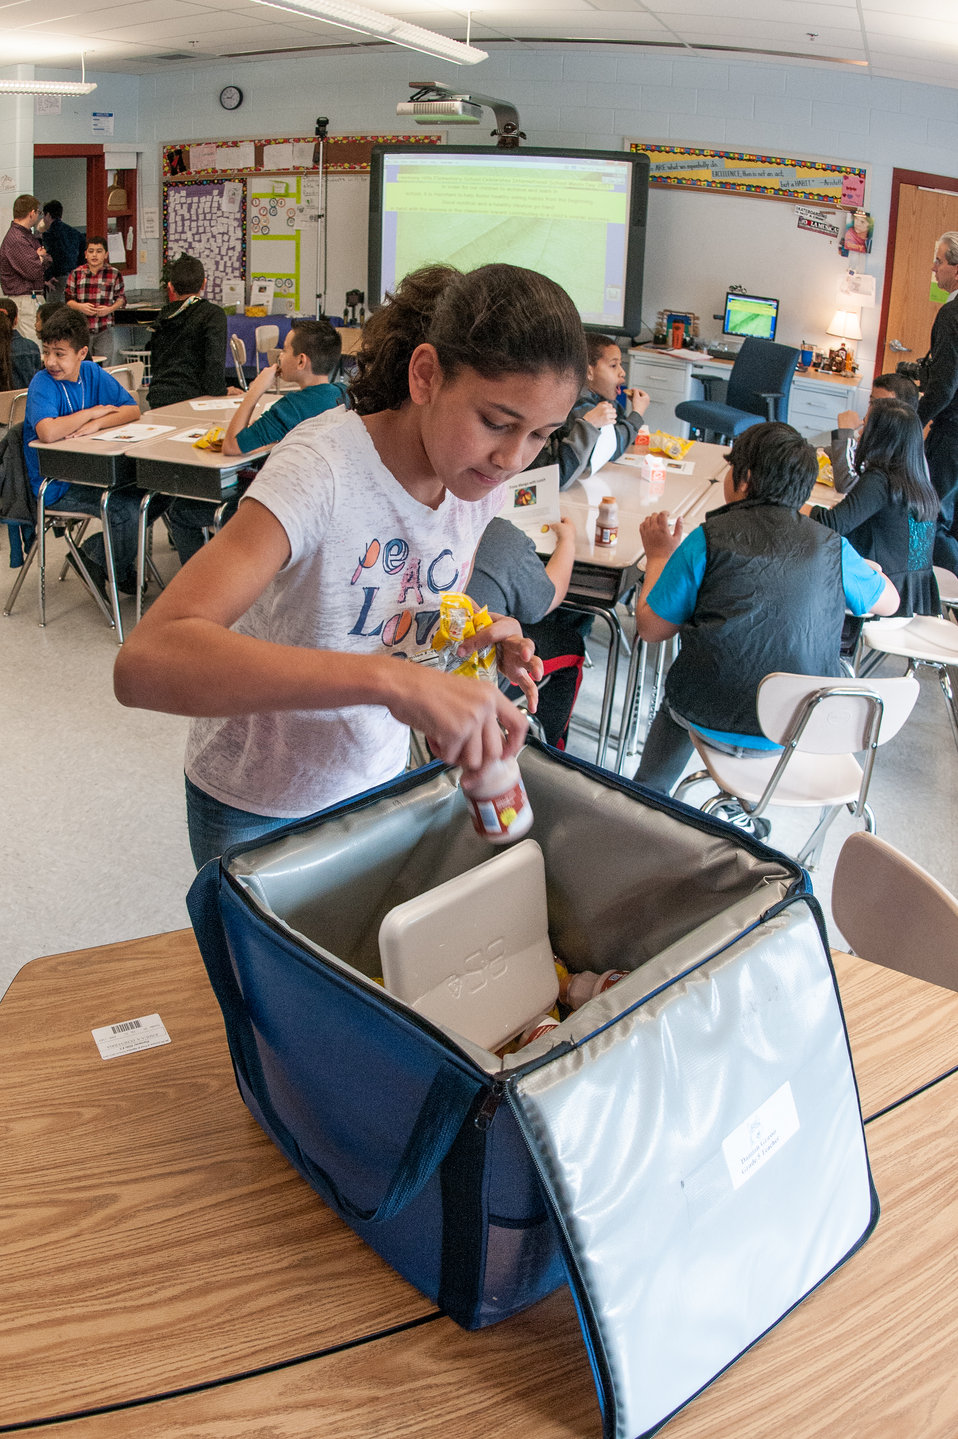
Students make breakfast choices during the inaugural International School Meals Day (ISMD) at Harmony Hills Elementary School in Silver Spring, MD, on Friday, March 8, 2013. at Harmony Hills Elementary School, who participates in the Maryland Meals for Achievement (MMFA), In-Classroom breakfast program, the fresh fruit and vegetable program, and the summer food service program. Department of Agriculture (USDA) Food, Nutrition and Consumer Services participated in (ISMD) Mr. Damien Grasso's 5th grade class was paired with Mrs. Karen McAllister’s class at Dalry Primary School in North Ayrshire, Scotland, United Kingdom. Using a real-time online video website service, the children shared some of the healthy eating and physical activity choices available to them. The Dalry fitness program includes Zumba classes, and Harmony Hills includes a Fitness Club. Both schools have soccer programs. The Harmony Hills 5th grade students shared their thoughts about their healthy menu items, mango, kiwi, and hummus. The Dalry students honored the Maryland students, by having prepared a Southern Maryland dessert, Smith Island cake (made with 7 thin cake layers). Initially, 14 classrooms (grades 3-8) in the U.S. are now connected with 14 classrooms in Scotland. USDA plans to expand the initiative to include partnerships with additional countries in future years. USDA's Food and Nutrition Service oversees the administration of 15 nutrition assistance programs that work in concert to form a national safety net against hunger. Learn more by visiting www.fns.usda.gov and twitter @USDANutrition.